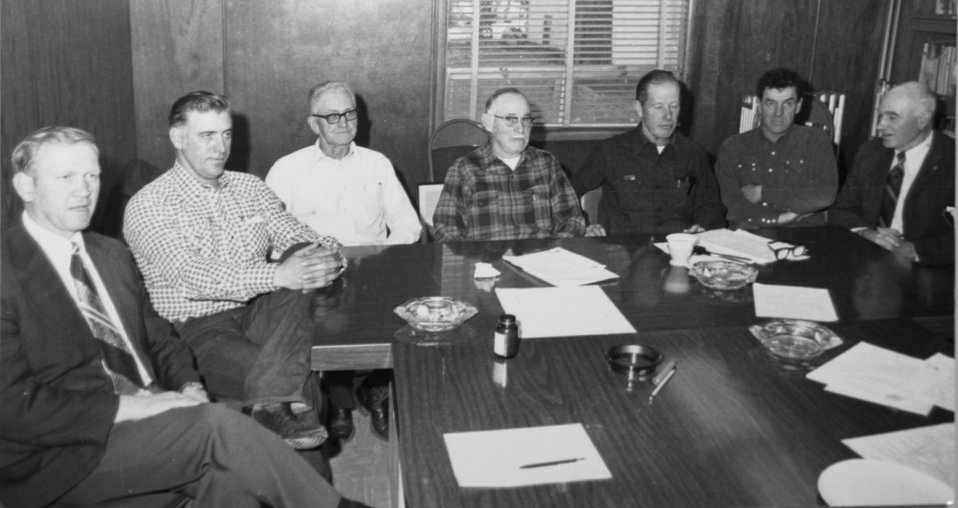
Last BLM Aadvisory Board meeting Burns District Dec, 1974. L-R: Arlie Oster, Wynn Hendrich, Leon Thompson, Rex taylor, Jim Sitz, Don Toelle, and Carl Mayo.